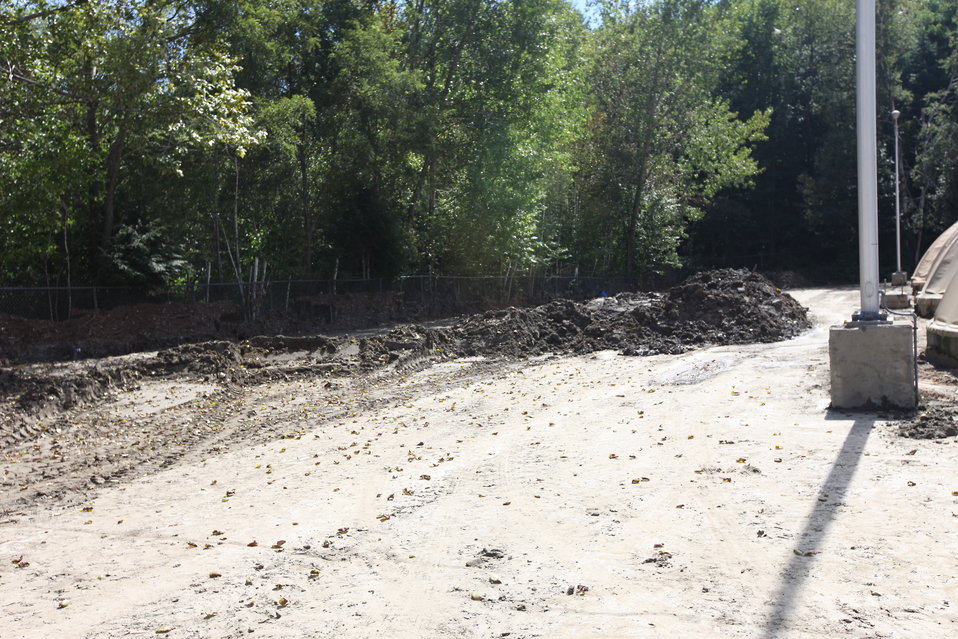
Storm damage relief at White River NFH

Clean-up of mud and silt deposited during the flood.